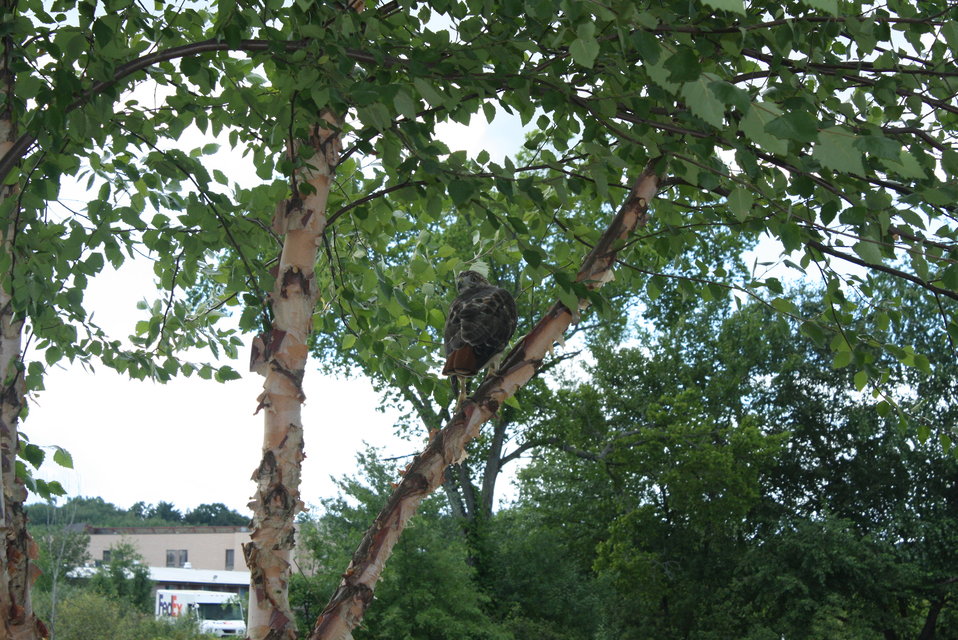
Red-tailed Hawk in tree

Hawk outside of the RO, August 14 2013, surveys its surroundings